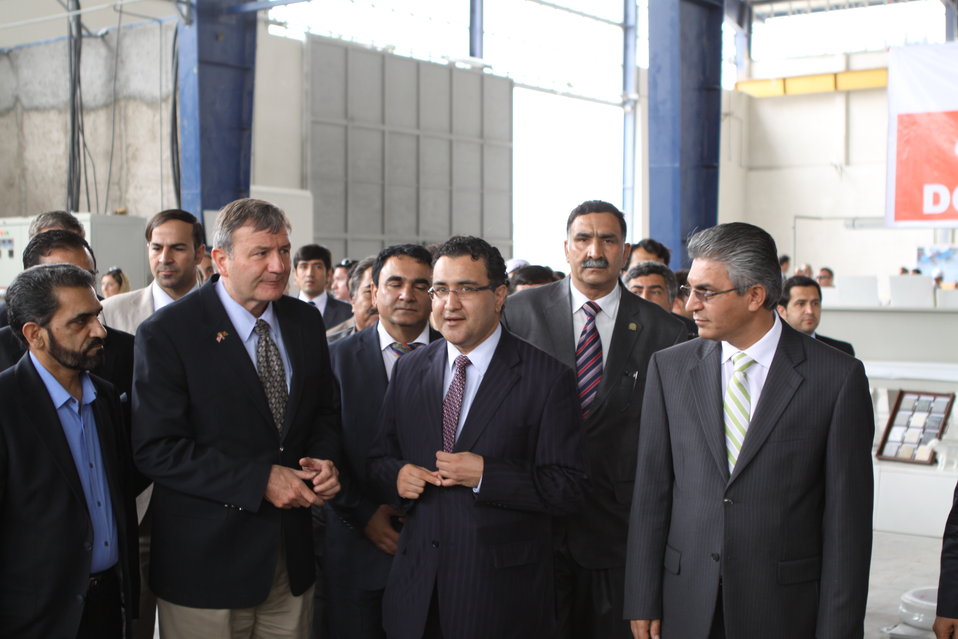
100525 Hirat Marble Conference 098